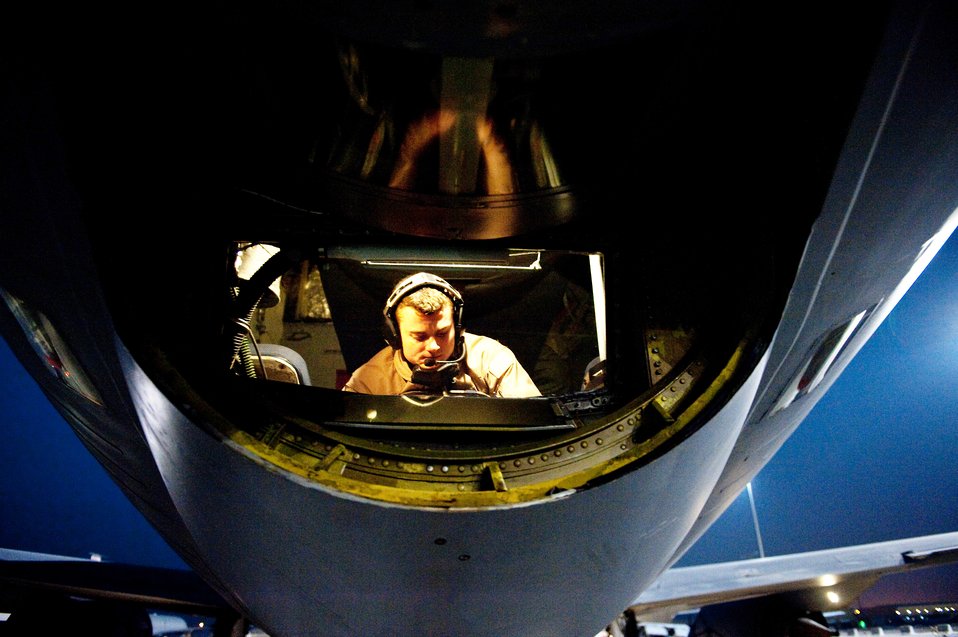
KC-135 crews prepare for mission

Senior Airman Andrew Deck conducts a KC-135 Stratotanker preflight check, Dec. 2, 2009, at an airfield in Southwest Asia. Airman Deck is a boom operator assigned to the 340th Expeditionary Air Refueling Squadron.